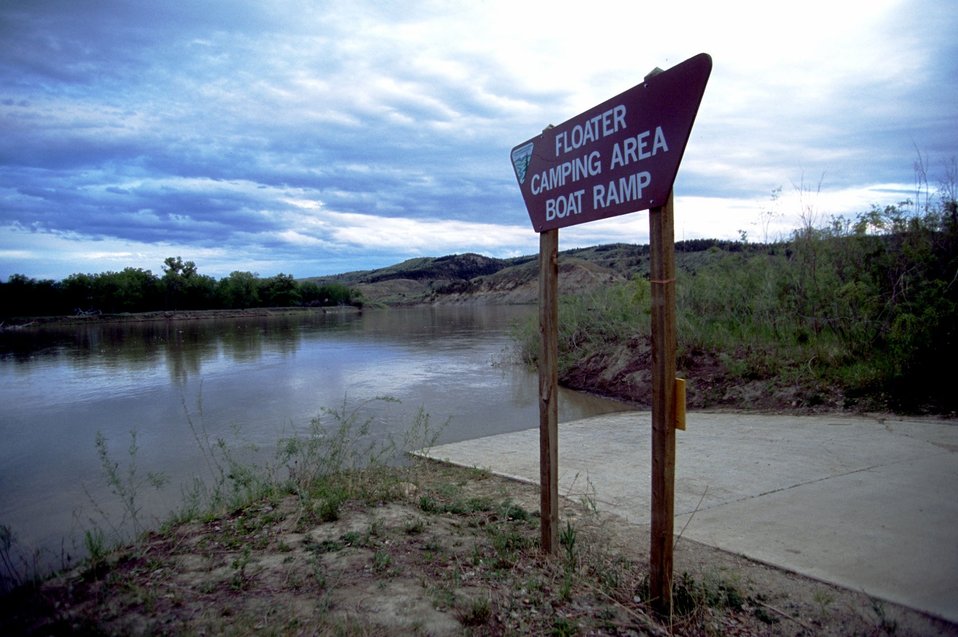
Information sign near the Missouri River at Kipp Recreation Site